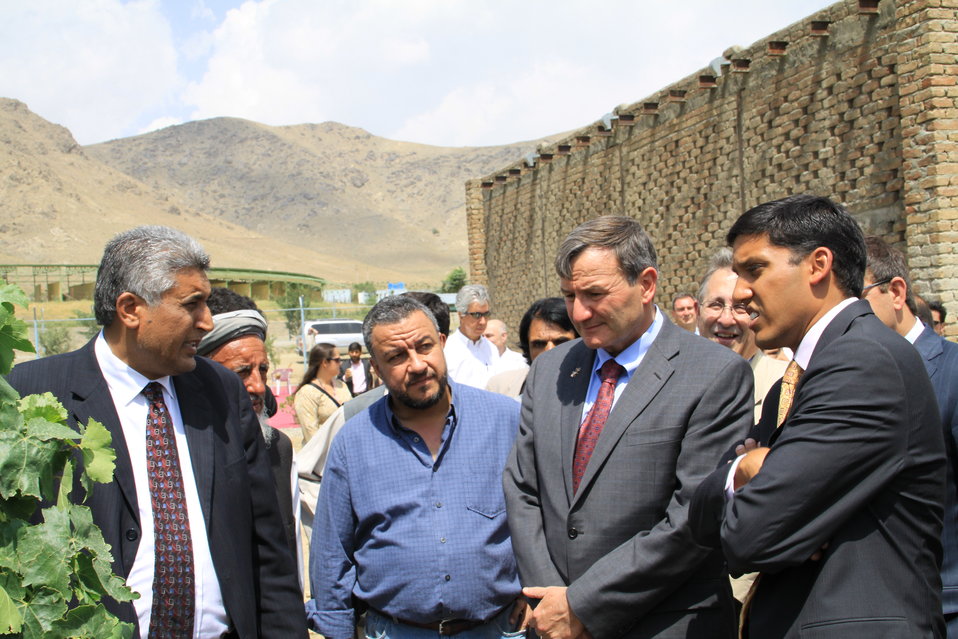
Badam Bagh Farm